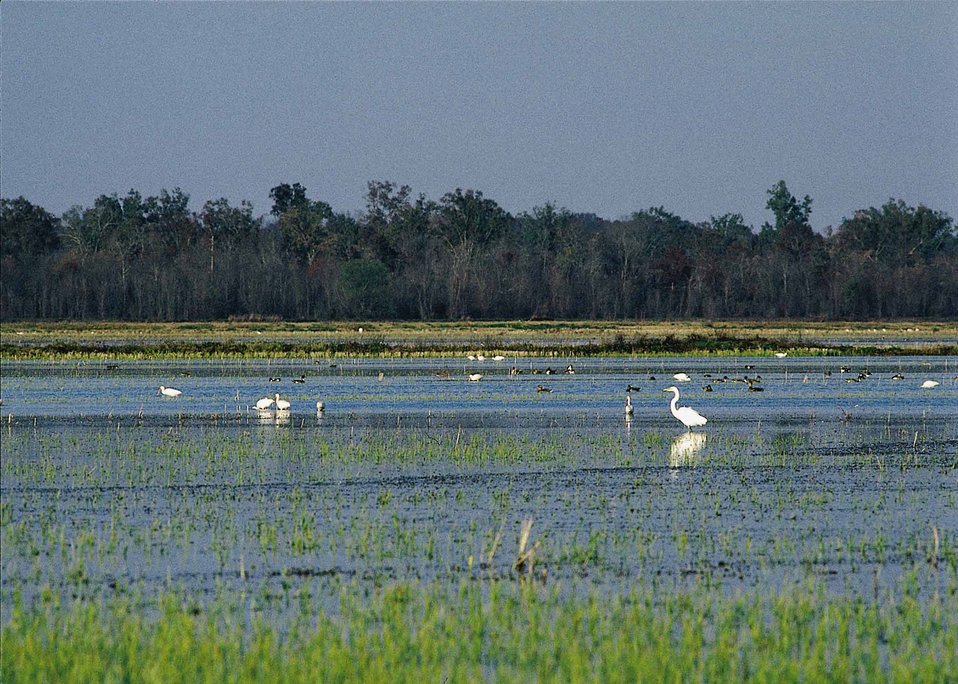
Waterfowl of many species find habitat in farmland flooded after rice harvest in Louisiana.